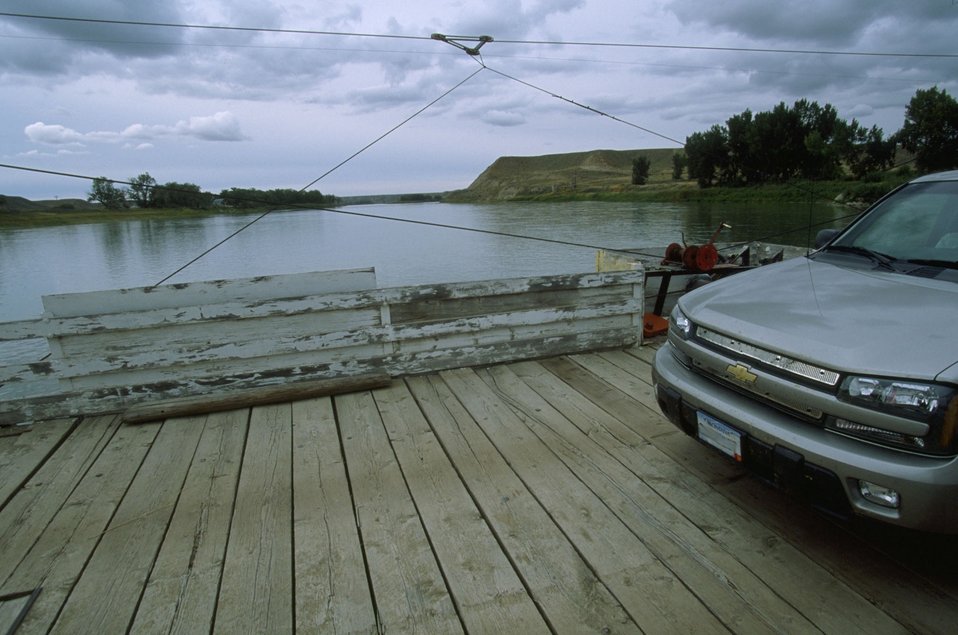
Stafford Ferry across the Upper Missouri River